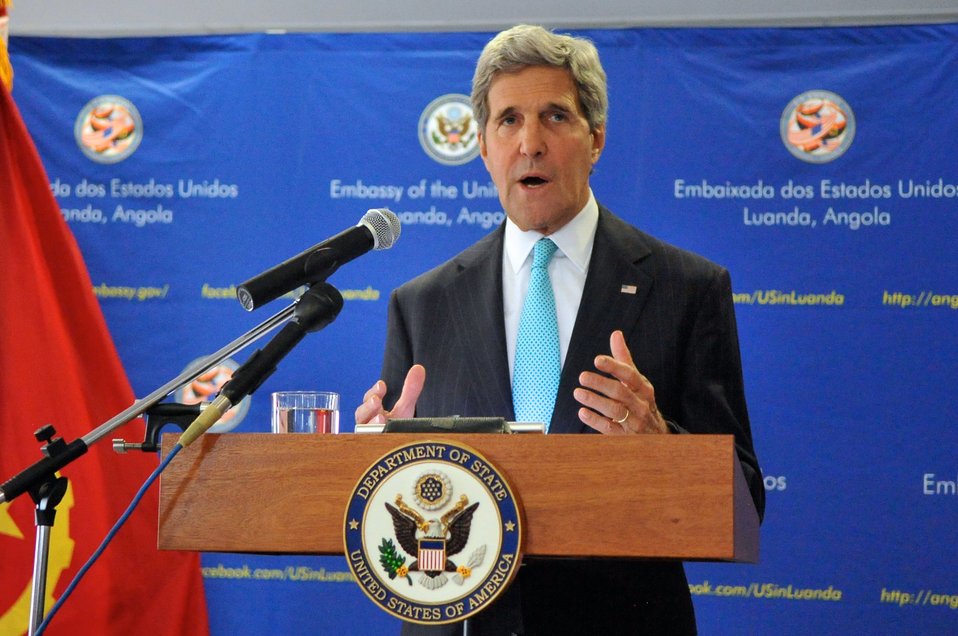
Secretary Kerry Addresses Reporters Following Meetings in Angola

U.S. Secretary of State John Kerry addresses reporters after his bilateral meetings with Angolan President Jose Eduardo dos Santos and Foreign Minister Rebelo Chikoti in Luanda on May 5, 2014.